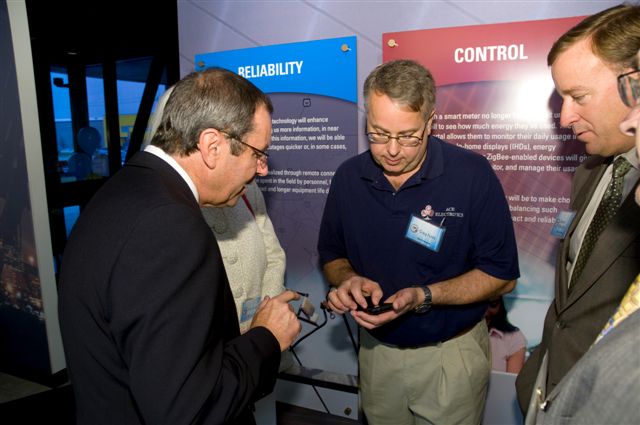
Craig Funni demonstrates an iphone app